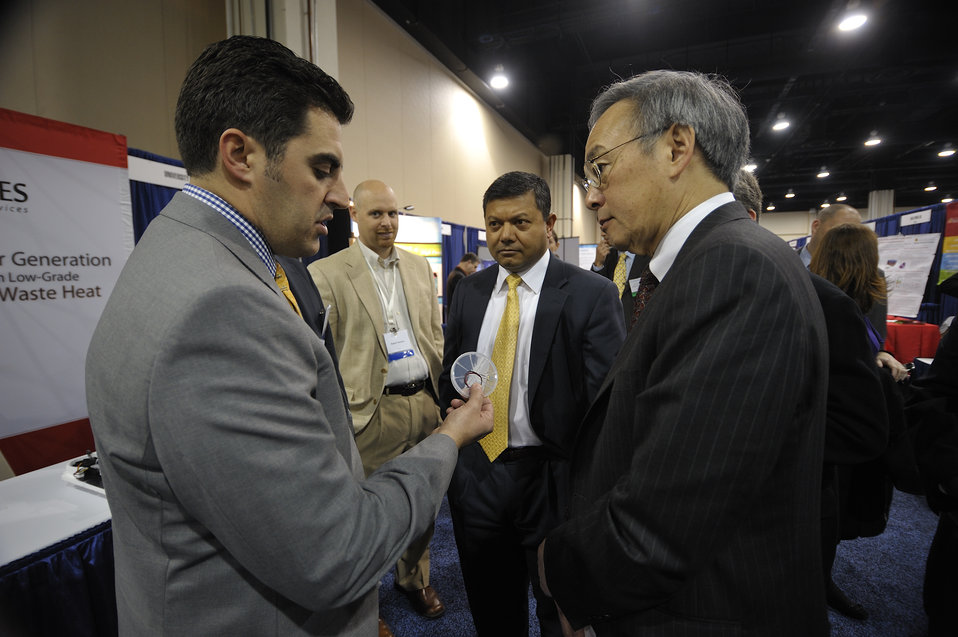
ARPA-E Energy Innovation Summit 2011, 50 of 83

Steven Chu, Secretary, United States Department of Energy, and Dr. Arun Majumdar, Director, ARPA-E, tour the Summit's Technology Showcase.